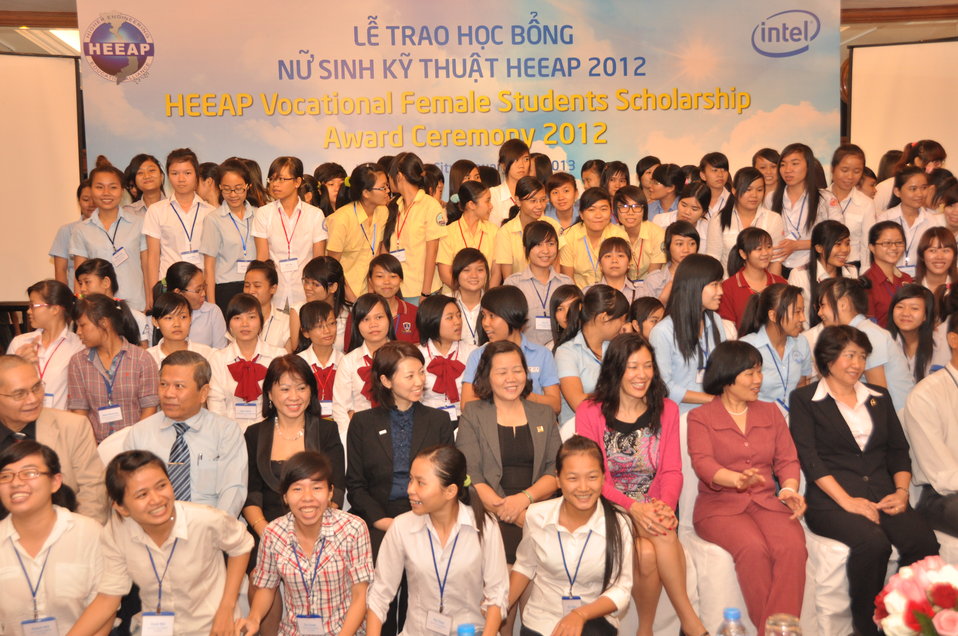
Female Vocational Student Scholarship Ceremony

Ho Chi Minh City, January 11, 2013